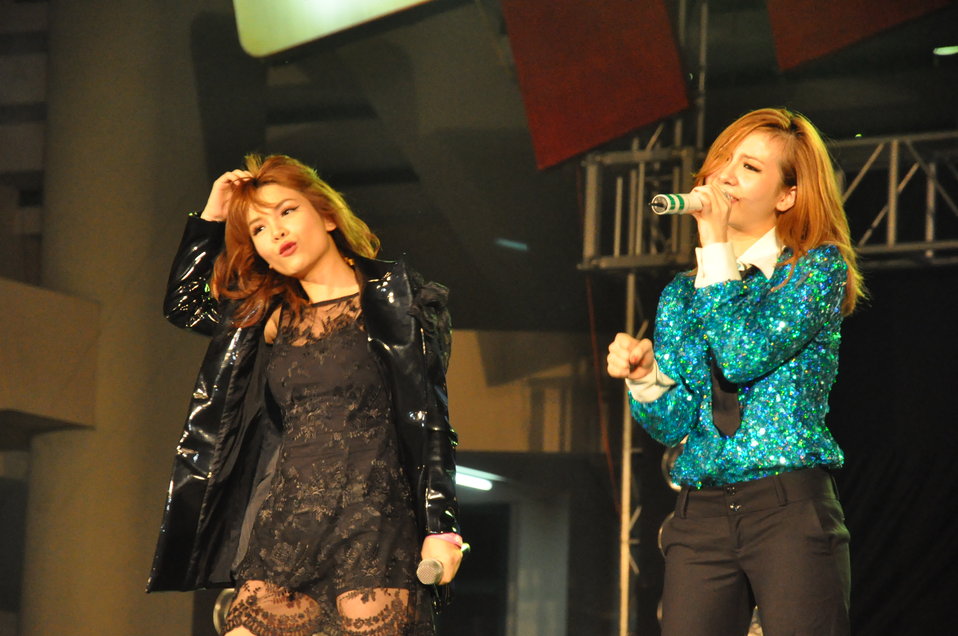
USAID and MTVEXIT concert in Can Tho

Concert in Can Tho against human trafficking, April 10, 2010